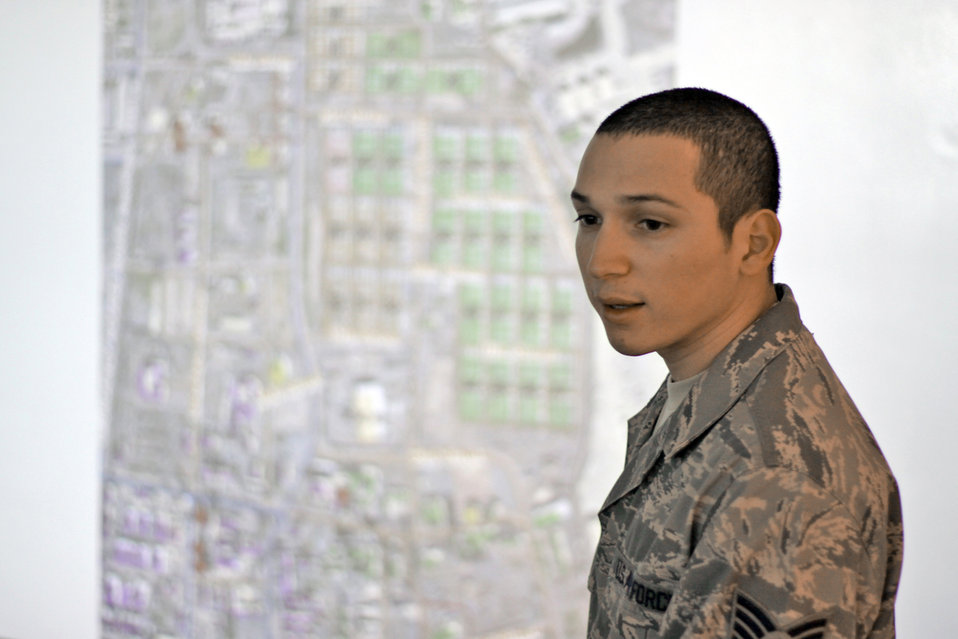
Airmen keep communication flowing

Staff Sgt. Juan Gallegos teaches the unit information management officer course recently at Camp Taji, Iraq. The sergeant and his team teach this course weekly to train incoming servicemembers to be the first-line of computer system administration in their unit. Sergeant Gallegos is a 518th Tactical Installation and Networking system administrator deployed from Hill Air Force Base, Utah. He is a native of Robert Lee, Texas.